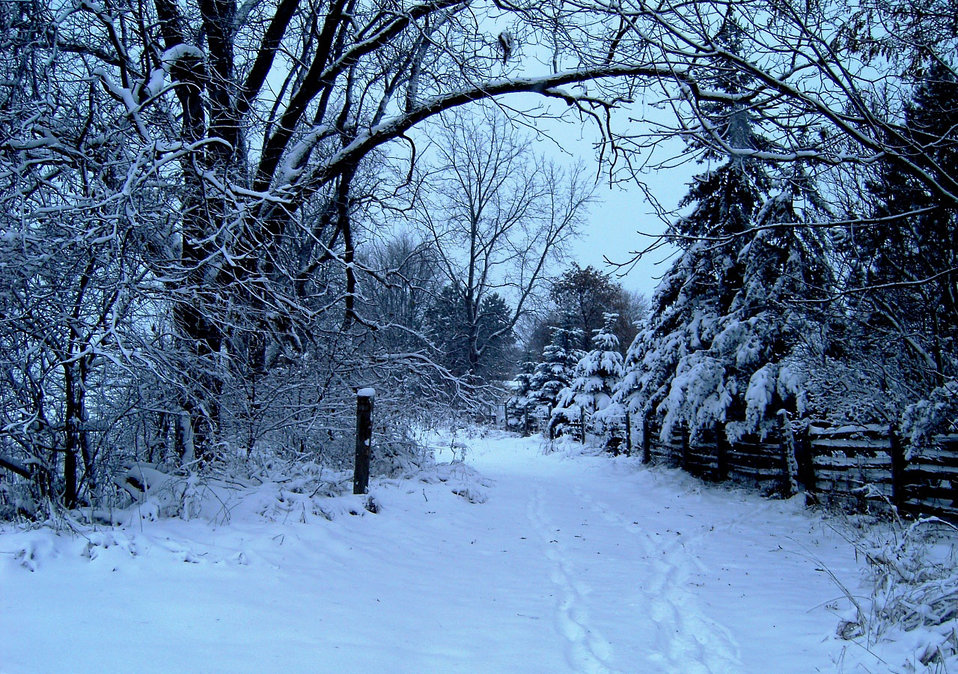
Snowy day

Just after a snow fall on an old farmer's road..